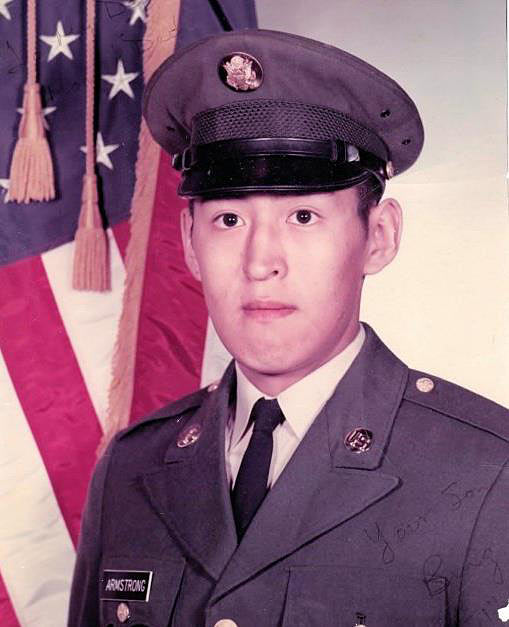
Fred Armstrong-Alaska Region

Fred Armstrong Jr., an Alaska Native Affairs Specialist, served in the Army during the Vietnam War era.